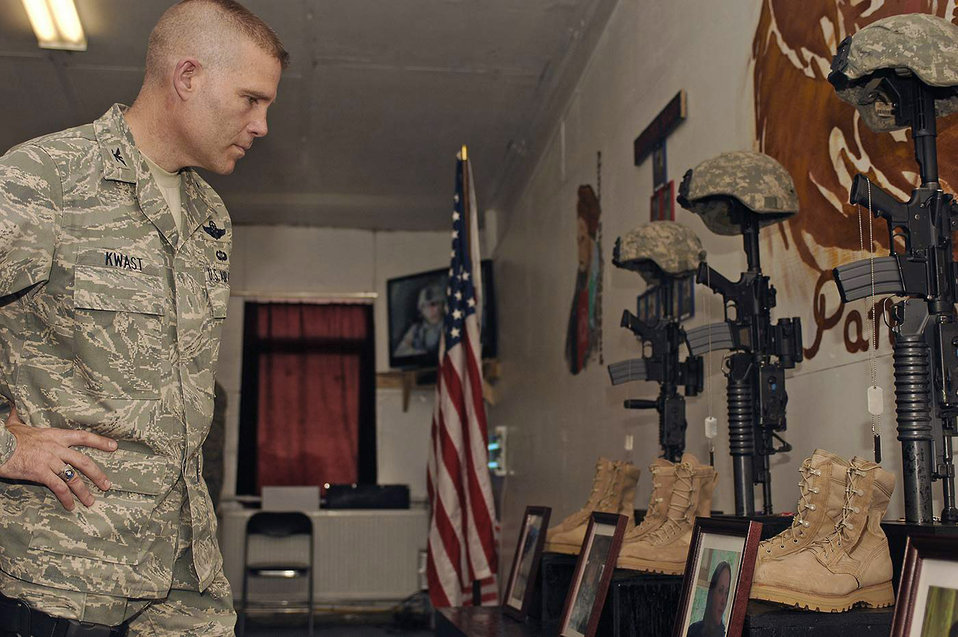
Panjshir reconstruction team bids farewell to fallen comrades

Col. Steven Kwast takes a moment to honor fallen members of the Panjshir Provincial Reconstruction Team during a May 31 memorial ceremony at Forward Operating Base Lion, Afghanistan. More than 75 American servicemembers and Afghan leaders attended the ceremony to honor Lt. Col. Mark Stratton, Army Master Sgt. Blue Rowe, Senior Airman Ashton Goodman and Abdul Samad who were killled when their convoy vehicle was struck by a suicide car bomber May 26. Colonel Kwast is the 455th Air Expeditionary Wing commander.